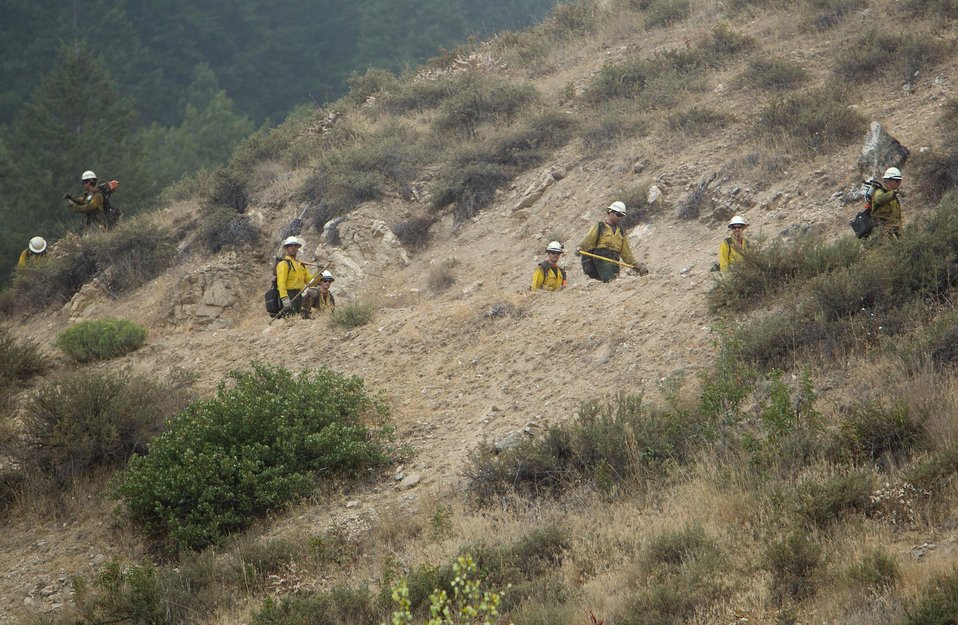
Fire crew brushing out behind Pine, ID homes at the Elk Complex Fire in the Boise National Forest. The Elk Complex Fire in the Boise National Forest near Pine, ID began on Aug. 08, 2013 by lightning has consumed approximately 98,413 acres and is approximately 5% contained.